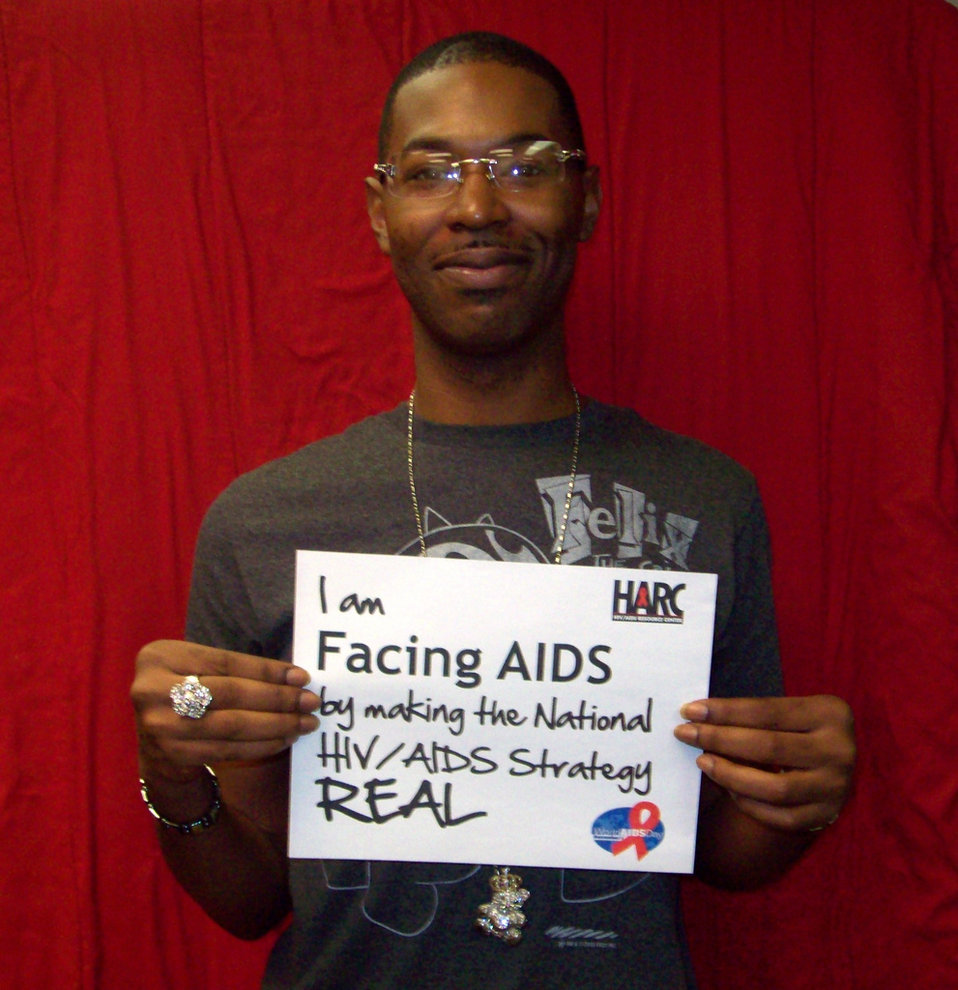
We are Facing AIDS through NHAS-24